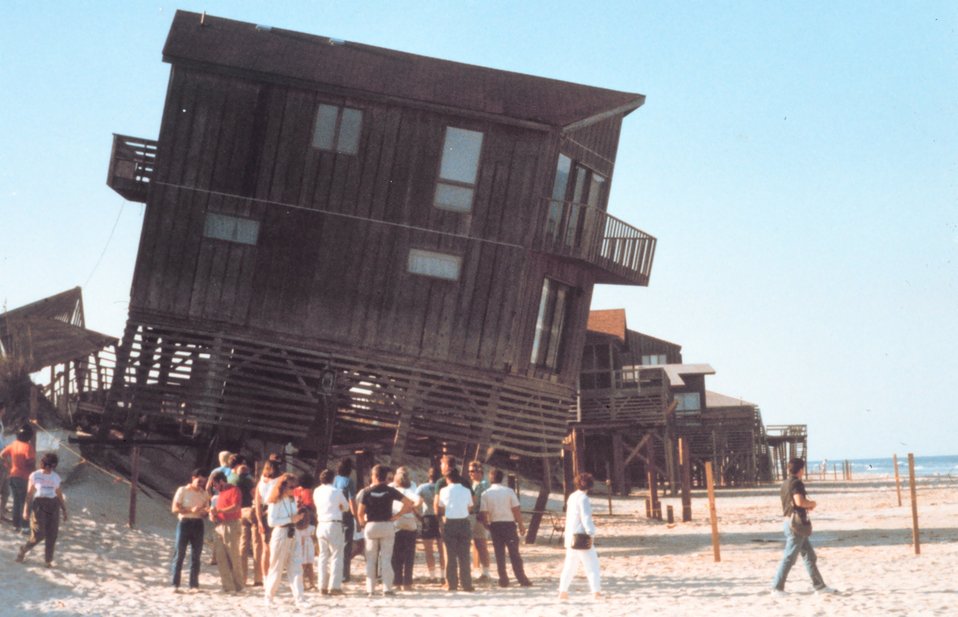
Erosion caused by a Northeaster on the Outer Banks